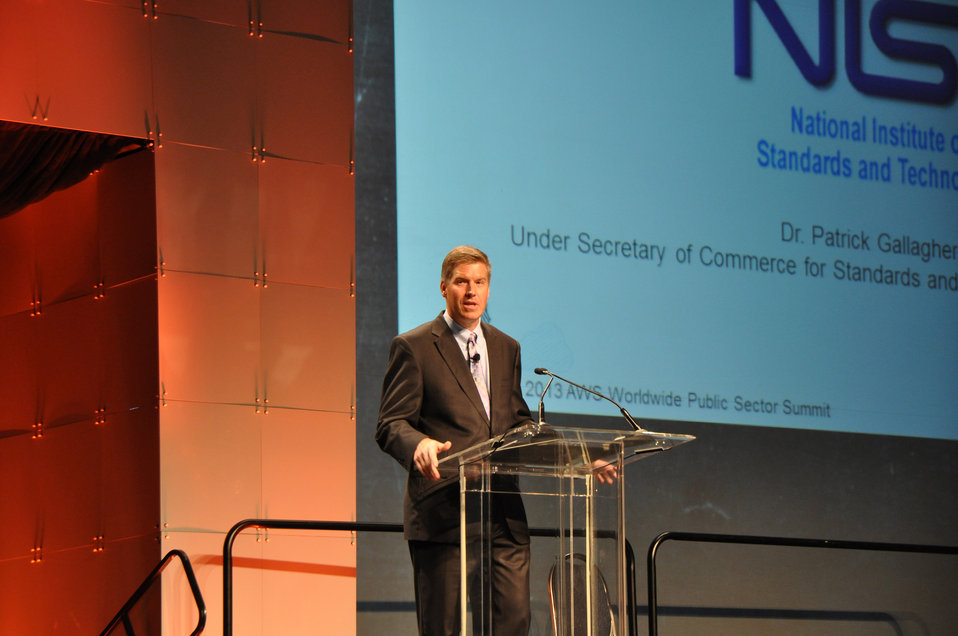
Dr. Patrick Gallagher, Under Secretary of Commerce for Standards and Technology and NIST Director at the Amazon Web Services Worldwide Public Sector Summit 2013.